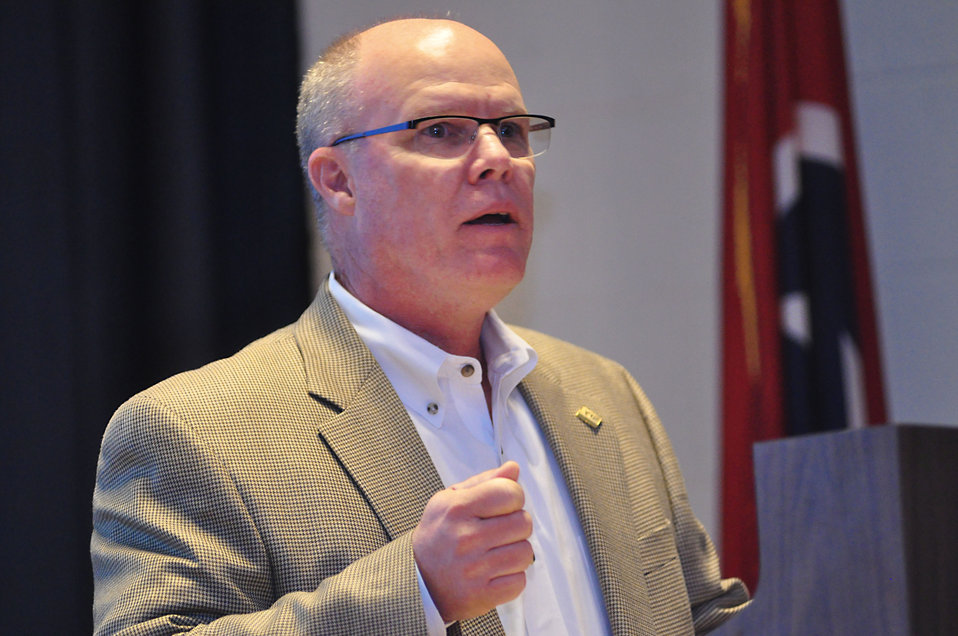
Gary Hagan, Manager for ESandH Oak Ridge Business Safety Partnership UPF 2014 Oak Ridge

14-042 DOE photo Lynn Freeny 4-2-2014 Oak Ridge Tennessee